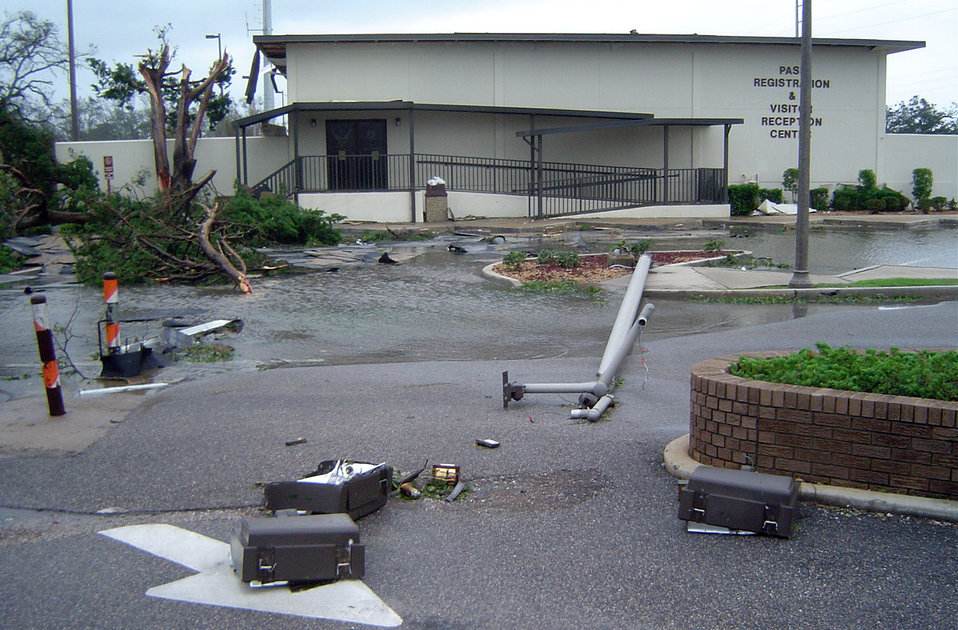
Hurricane Katrina hits Keesler AFB

KEESLER AIR FORCE BASE, Miss. -- Facilities here received extensive damage following a direct hit on the base by Hurricane Katrina. Officials are assessing the damage and are in contact with the Federal Emergency Management Agency.